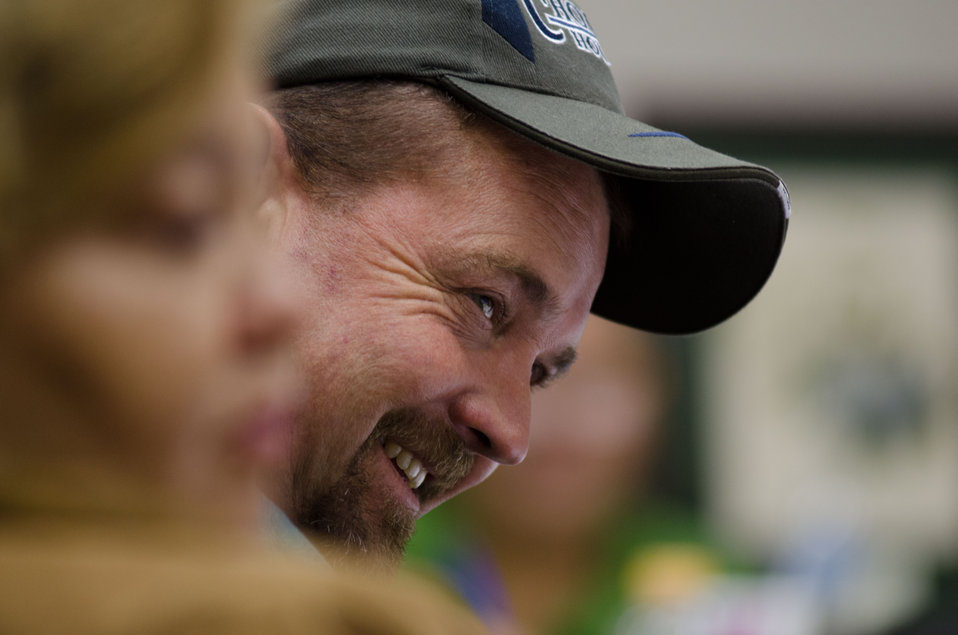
Farmer/Rancher Henry Holder of the Choctaw Nation, in Soper, OK, during the first administrative/training meeting of the U.S. Department of Agriculture's (USDA) Council for Native American Farming and Ranching (CNAFR) held on Monday, Aug. 13, 2012 at the USDA headquarters Whitten Building, in Washington, D.C. CNAFR was created to advise the Secretary on ways to eliminate barriers to participation for Native American Farmers and Ranchers in USDA programs. The Council was established as part of the Keepseagle settlement, and is conducted under the oversight of USDA's Office of Tribal Relations, which is part of the Office of the Secretary of Agriculture. The Director of Tribal Relations Joanna Mounce Stancil serves as Designated Federal Official (DFO) for the Council.